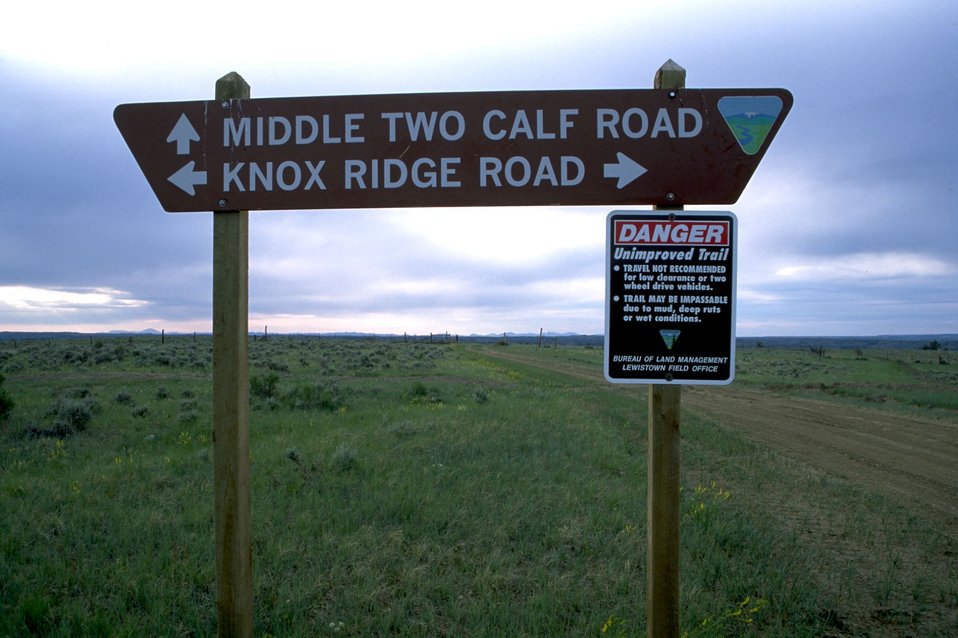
Direction and Warning signs in the Missouri Breaks area